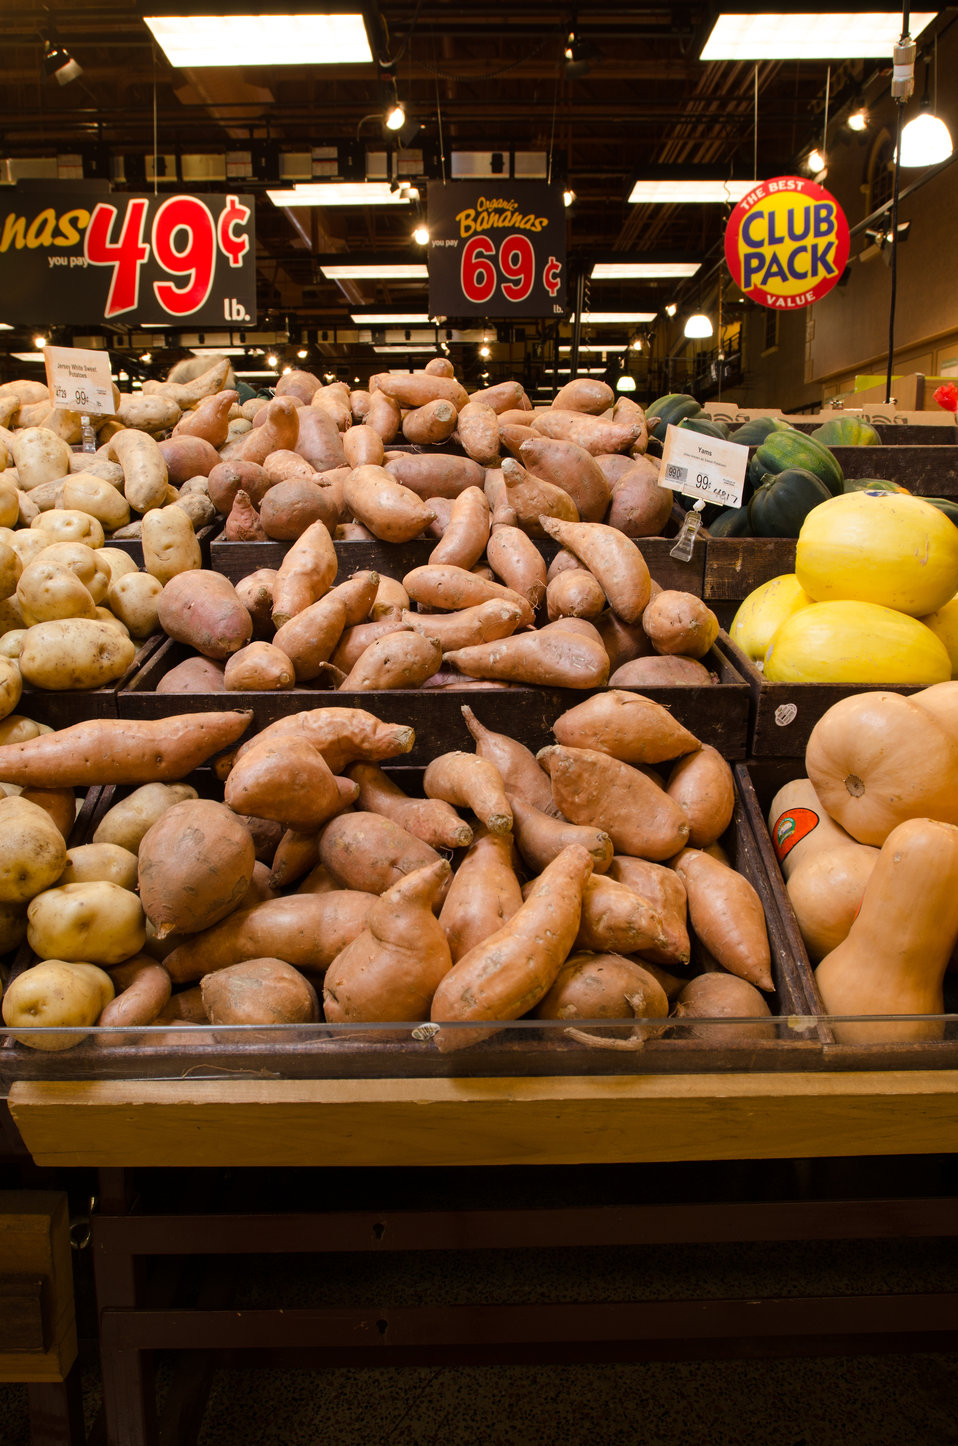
Produce at a grocery store in Fairfax, Virginia, on March 3, 2011.